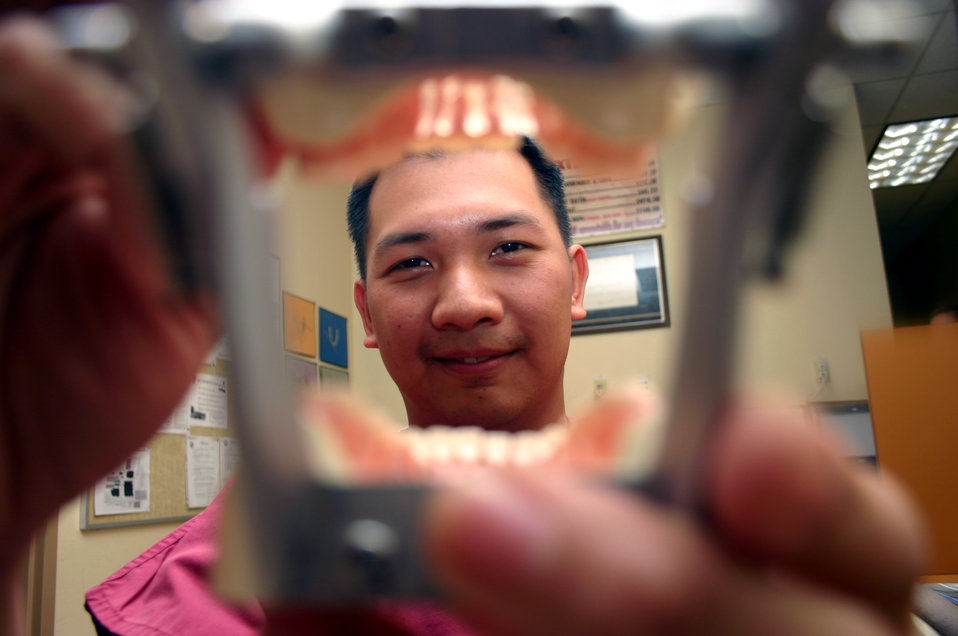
Filipino Airman sets his sights high

SHEPPARD AIR FORCE BASE, Texas -- Airman 1st Class Michael Dizon exams a model of teeth. He was a dentist in the Philippines, but enlisted in the Air Force to become a dental technician. He is working toward becoming an officer and is currently assigned to the 381st Training Squadron here.